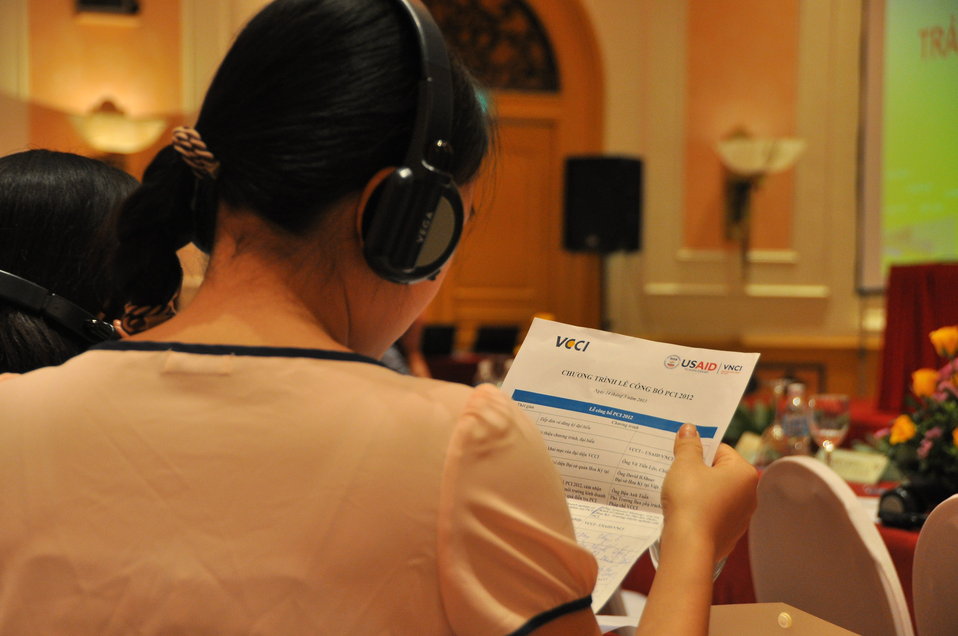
Provincial Competitiveness Index Launch, March 14, 2013

Hanoi, March 13, 2013